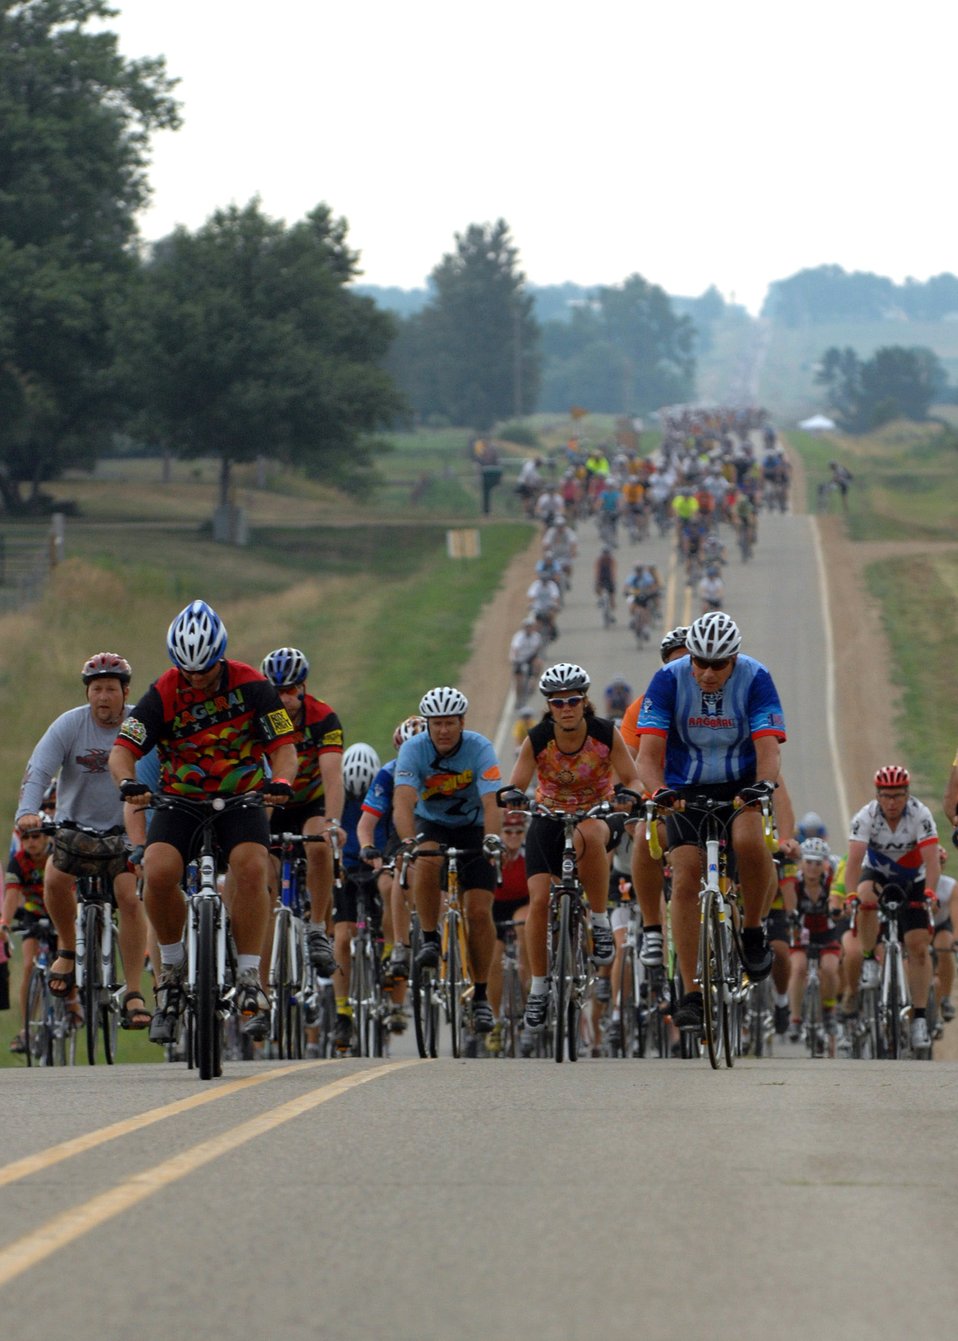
Airmen cycle across Iowa

Cyclists ride across the Iowa countryside from Spencer to Humboldt July 23 during the third day of the Register's Annual Great Bike Ride Across Iowa, known as RAGBRAI, a cycling event sponsored by the Des Moines Register newspaper. This is the 13th year the Air Force Cycling Team has participated in the RAGBRAI to support Air Force recruiting.